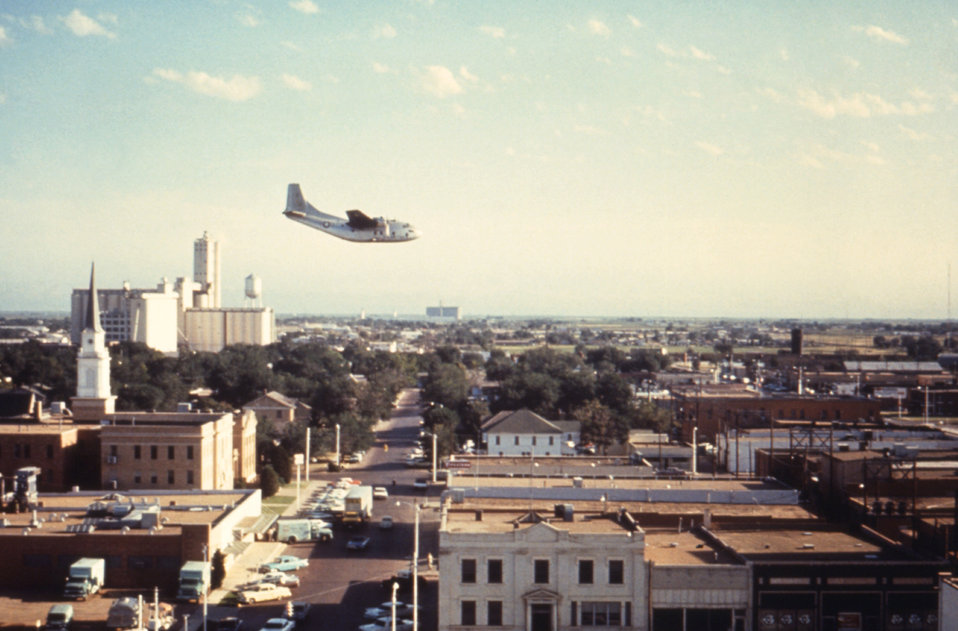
This 1976 photograph shows an airplane as it flies over a Texas city after dispersing its payload of insecticide.